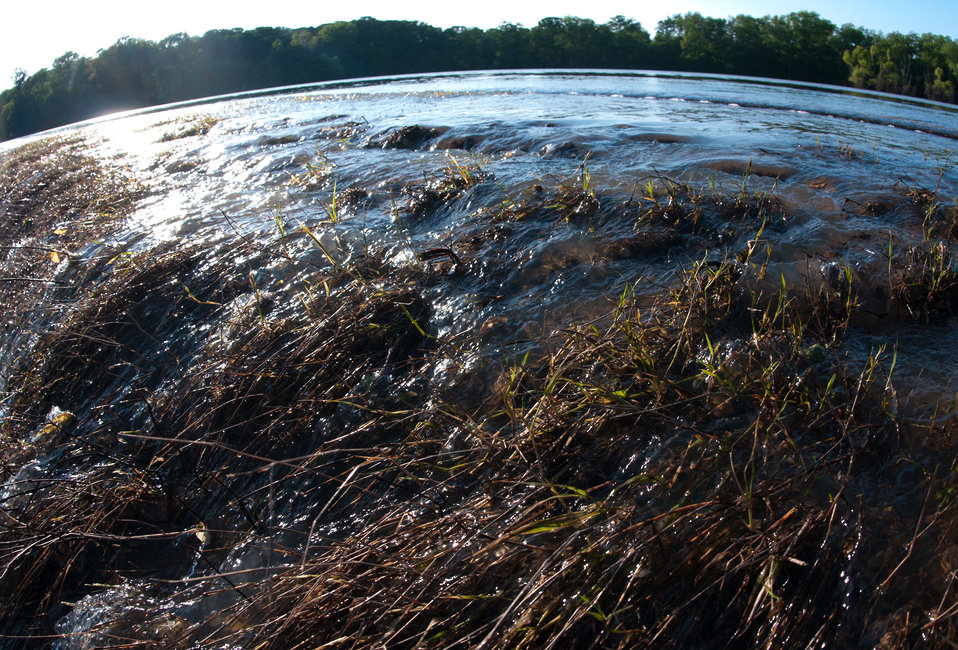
Receeding waters in Lauderdale County, TN begin to reveal widespread dead plants in agricultural region, on Saturday, May 21, 2011.